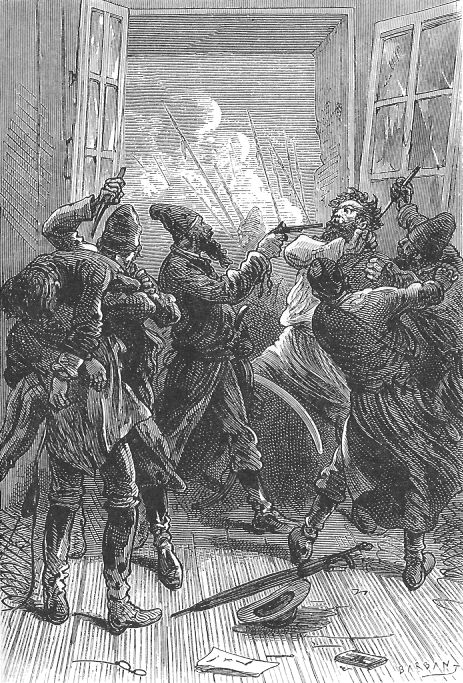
An illustration from the novel 'Michael Strogoff: The Courier of the Czar' by Jules Verne drawn by Jules Férat. Polski: Ilustracja powieści Juliusza Verne'a 'Michał Strogow, kurier carski' autorstwa Julesa Férata. Français : 'Michel Strogoff. Le courier du tzar', Jules Férat.